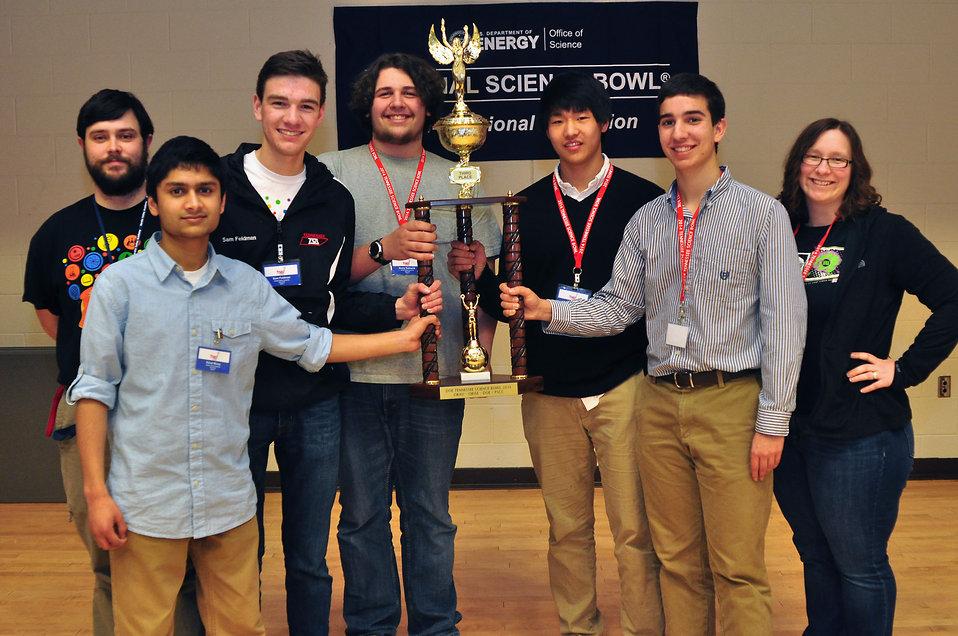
3rd place Hardin Valley HS 2014 TN DOE Science Bowl

14-026 DOE photo Lynn Freeny 2-22-2014Third Place Harden Valley Left to Right Coach Michael Hartman, Sanat Mulay, Sam Feldman, Avery Sukienik, Kai Zhao, Chase Toth, Coach Amber Hartman